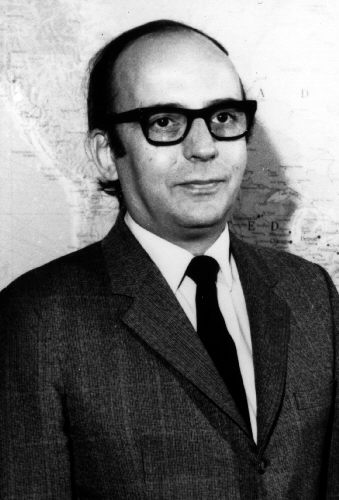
David J. Sencer, M.D., M.P.H., Chief, CDC